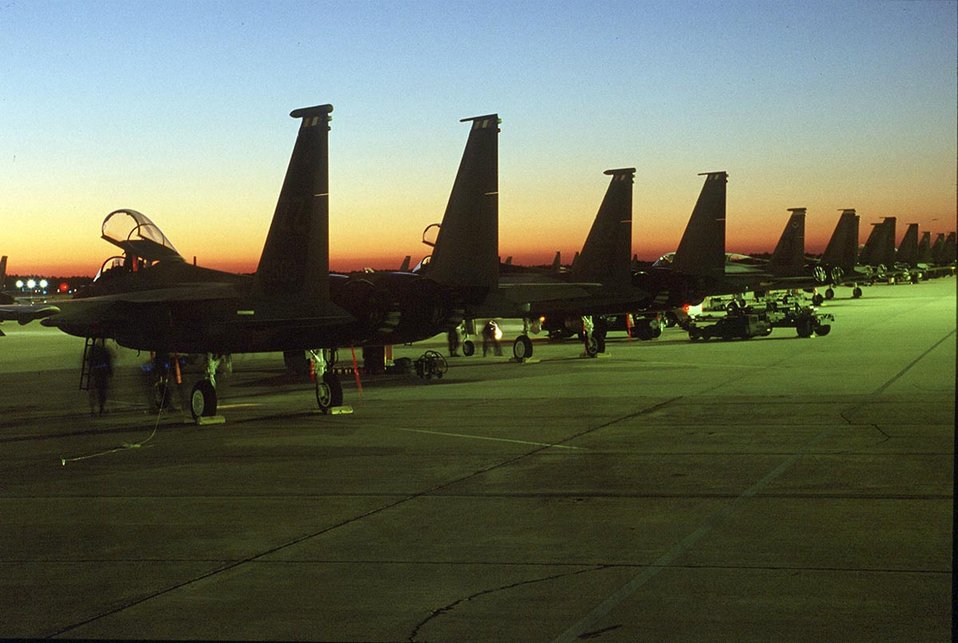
Ramp time

TYNDALL AIR FORCE BASE, Fla. -- A row of F-15s sits on the ramp here. The F-15 Eagle is an all-weather, extremely maneuverable, tactical fighter designed to gain and maintain air superiority in aerial combat. The single-seat F-15C and two-seat F-15D models entered the Air Force inventory beginning in 1979.